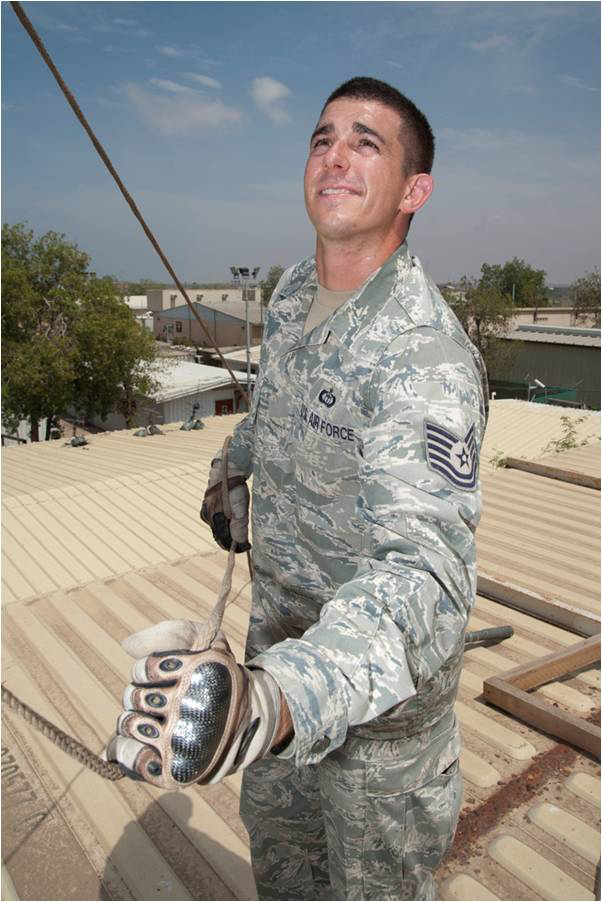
2011 AF Weather NCO of Year

Tech. Sgt. Gregory Spiker, joint meteorology and oceanography operations weather forecaster, Combined Joint Task Force – Horn of Africa, uses a rope to lower the mast on radar used to detect rain and thunderstorms. Spiker was named the 2011 Air Force Weather Noncommissioned Officer of the Year.